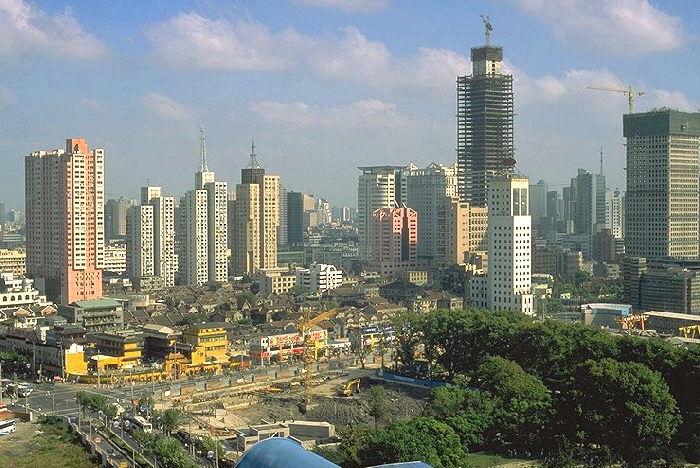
Shanghai.